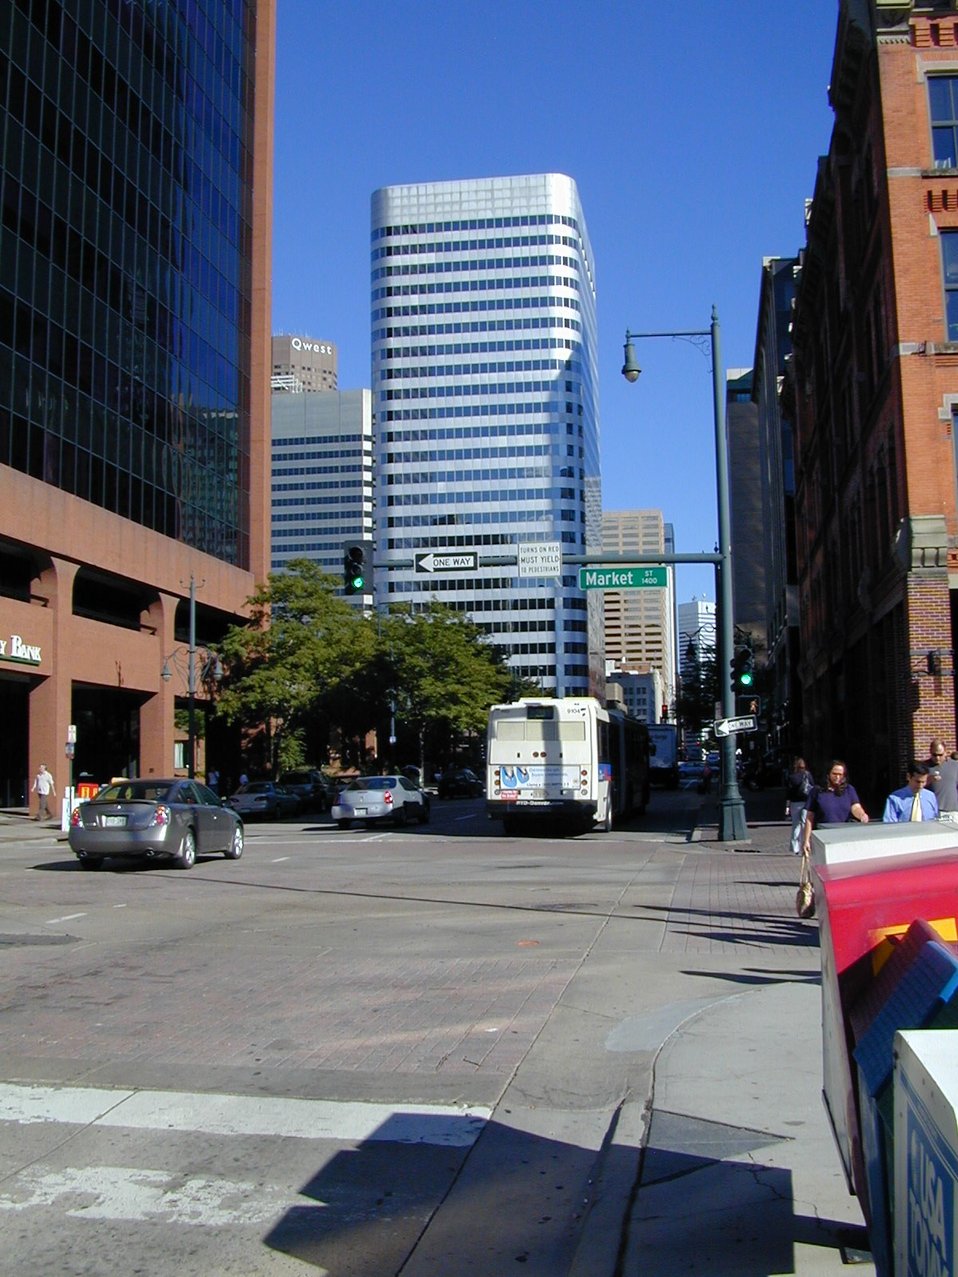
17thstreetdenver